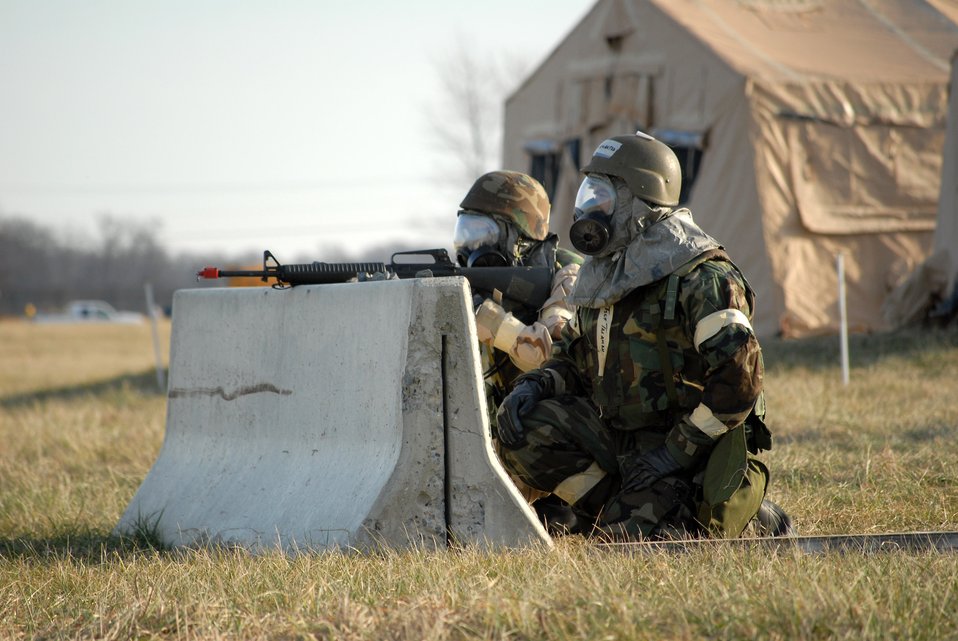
Dover exercise tests Airmen's combat environment skills

Tech. Sgt. Jesse Talamantes and Staff Sgt. Andrew Gassner seek protection behind a concrete barrier during Exercise Haunted House Battle Ax Jan. 7 at Dover Air Force Base, Del. Defensive measures was one of the many skills practiced during the exercise. Sergeant Talamantes and Sergeant Gassner are assigned to the 9th Airlift Squadron.